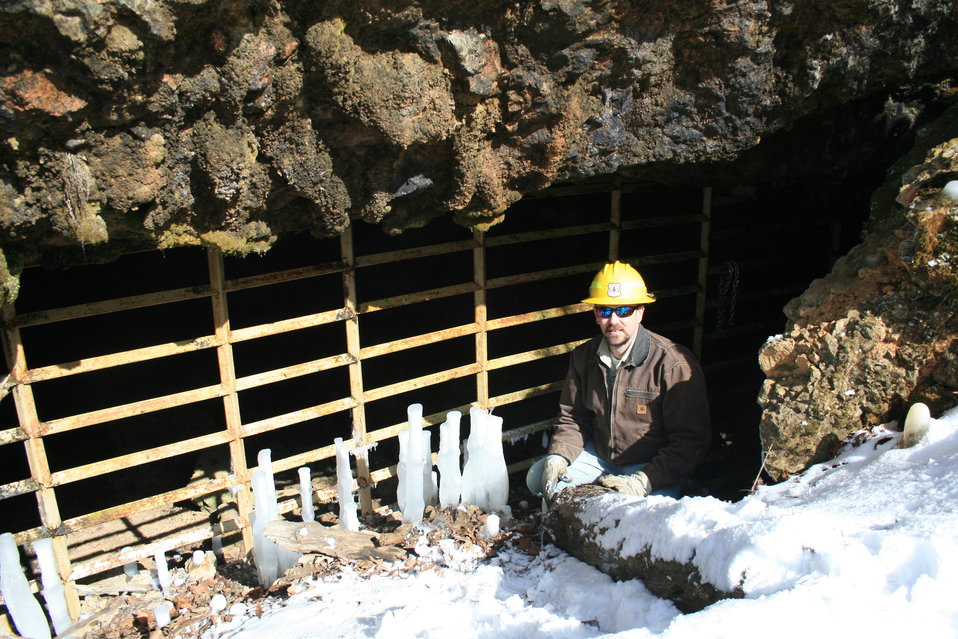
USFS staff and gated cave

US Forest Service staff and gated cave in Missouri